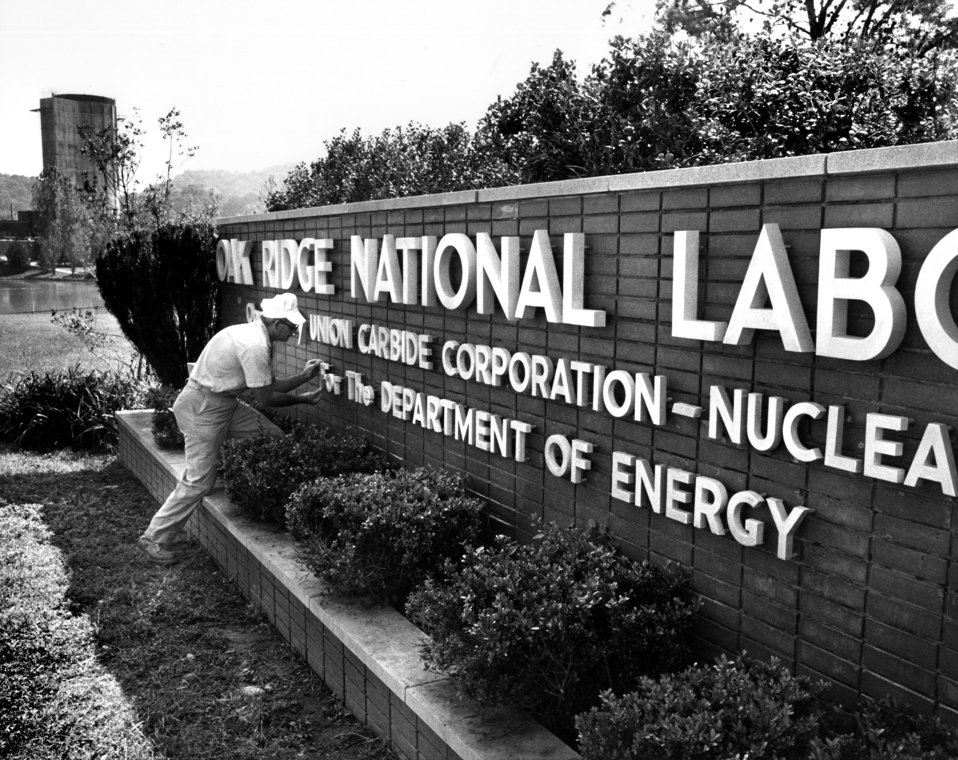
Sign at ORNL Oak Ridge

77-410 DOE photo Frank Hoffman 9-16-1977 Oak Ridge Tennessee